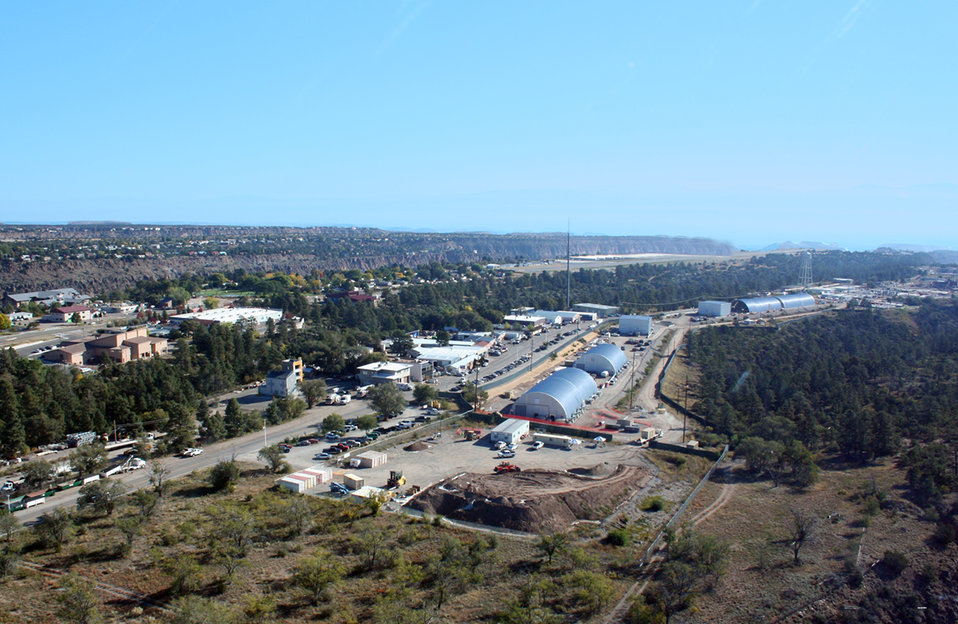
Protecting Recovery Act Cleanup Site During Massive Wildfire

July 2011 - Effective safety procedures in place at Los Alamos National Laboratory would have provided protections in the event that the raging Las Conchas
fire had spread to the site of an American Recovery and Reinvestment Act project.

The Recovery Act-funded excavation of the Lab’s oldest waste disposal site, Materials Disposal Area B, is being done inside sturdy metal enclosures.